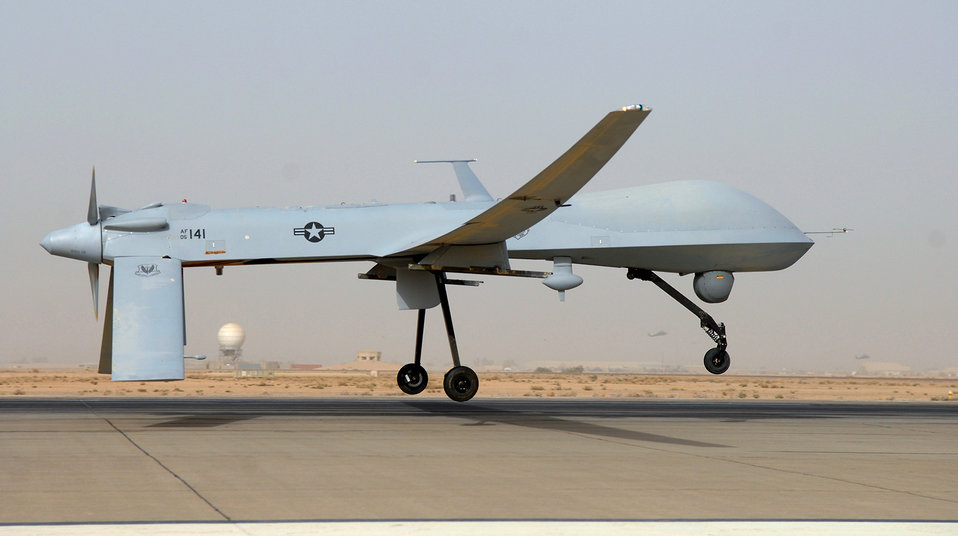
June 27 airpower summary

An MQ-1 Predator takes off in support of Operation Iraqi Freedom. The Predator carries the multi-spectral targeting system with inherent AGM-114 Hellfire missile targeting capability and integrates electro-optical, infrared, laser designator and laser illuminator into a single sensor package.